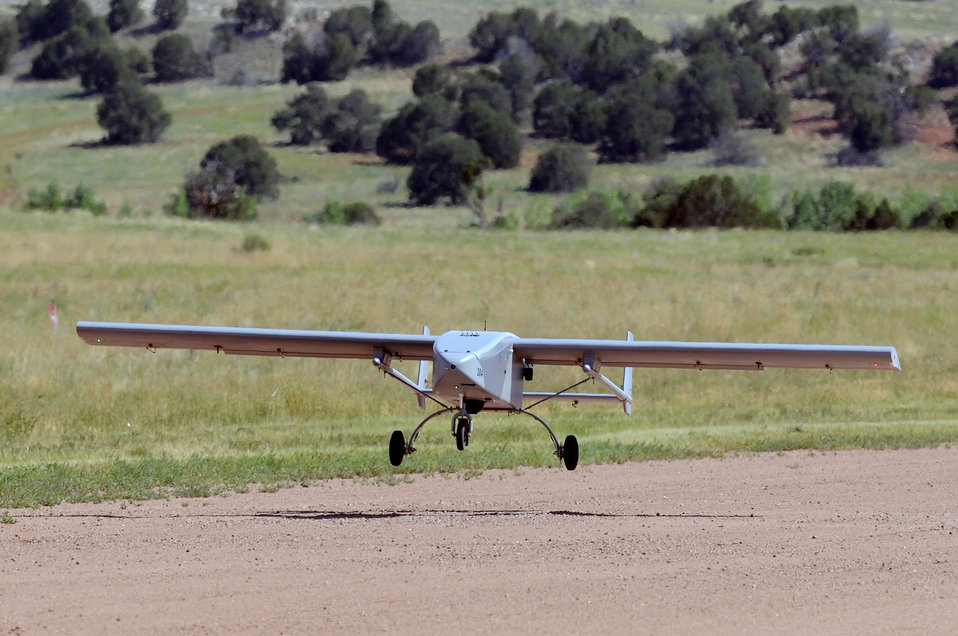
Academy officials add unmanned aircraft system into curriculum

The U.S Air Force Academy's unmanned aircraft systems Viking 300 aircraft takes off July 22 at Fort Carson, Colo.